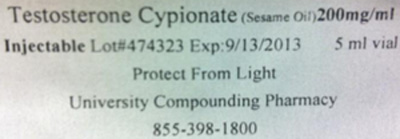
RECALLED – Testosterone Cypionate (Sesame Oil), Testosterone Cypionate/Testosterone Proprionate, PGE-1 NS, more

September 6, 2013 – Product Recall – University Compounding Pharmacy Initiates a Nationwide Voluntary Recall of Certain Pharmacy Products due to Lack of Assurance of Sterility Concerns
.